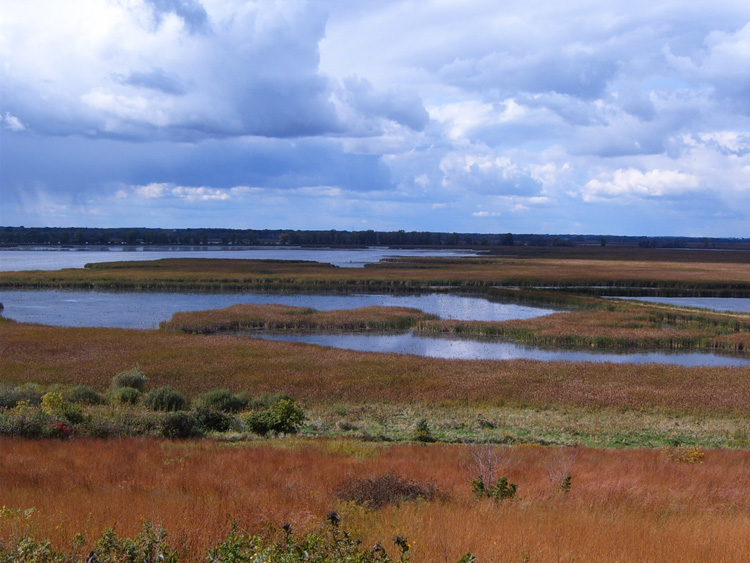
Wisconsin